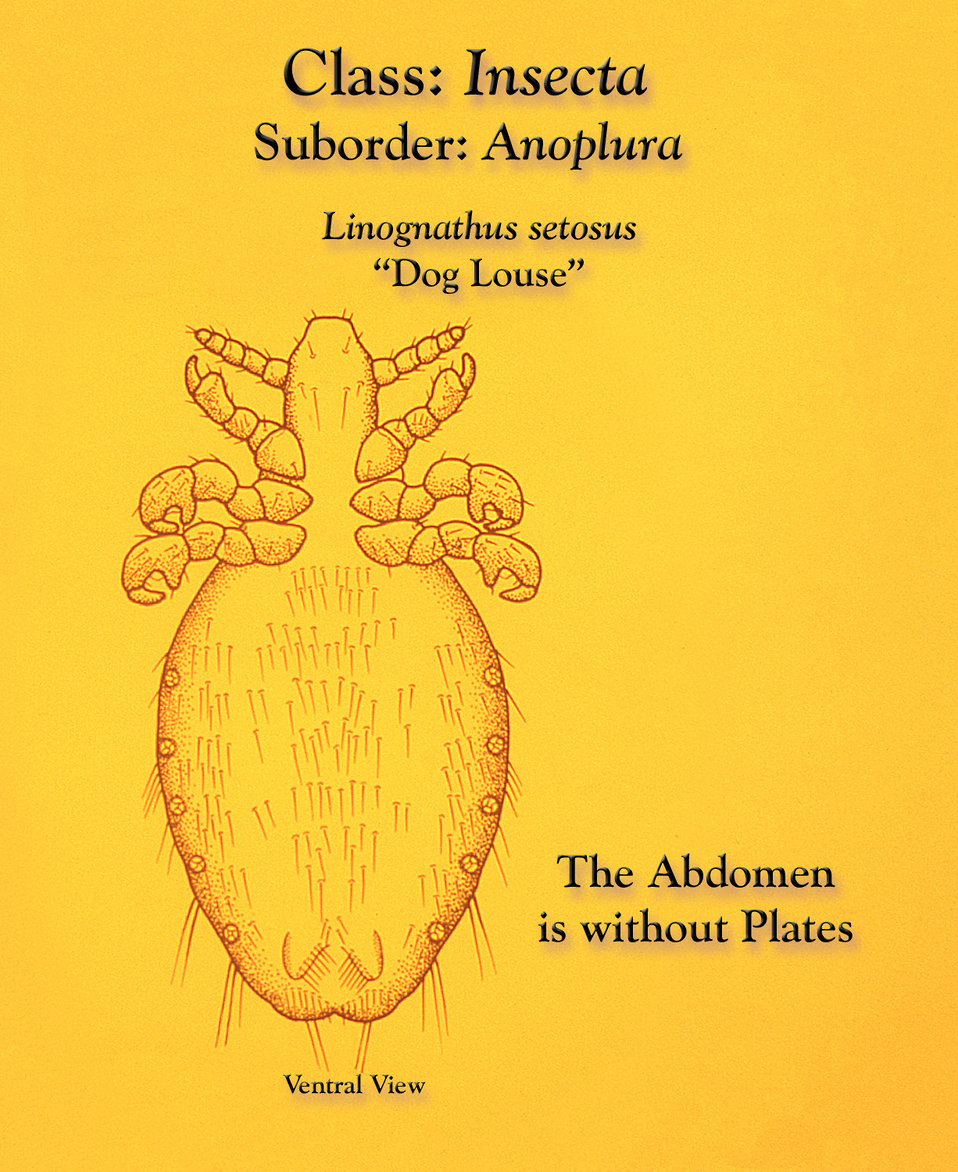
This illustration depicts a ventral view of a 'dog louse', Linognathus setosus, displaying an abdomen with no segmental exoskeletal plates.